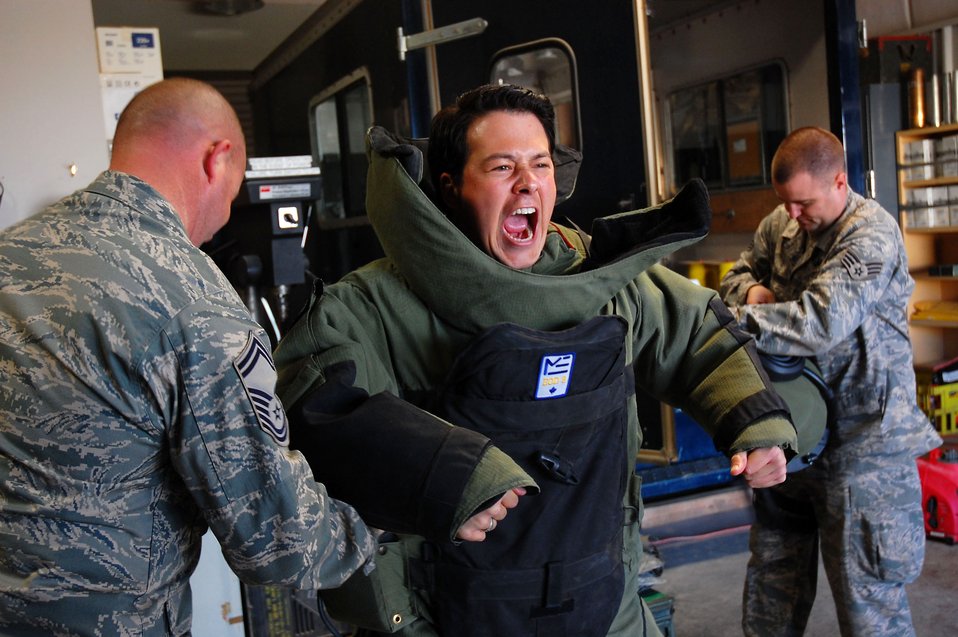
Yellowcard rocks servicemembers in Southwest Asia

Senior Master Sgt. Russell Corner and Senior Airman Charles Howell suit-up Sean Mackin during a Jan. 12 tour of a Southwest Asia air base. Mr. Mackin is a vocalist and violinist for the Yellowcard band. The tour was a way for the band to say thank you to American servicemembers on their five-day United Service Organizations' tour. Sergeant Corner and Airman Howell are assigned to the 386th Expeditionary Civil Engineer Squadron Explosive Ordnance Disposal Flight.